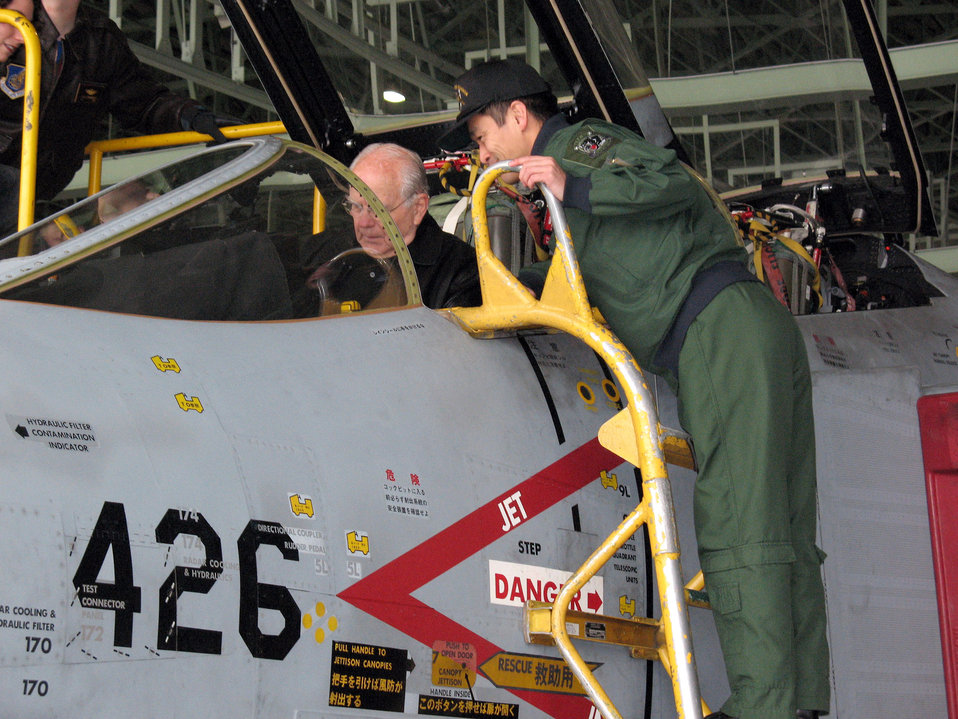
Vietnam veteran's experiences guide today's Airmen

Retired Col. James Gilliland sits in the cockpit of an RF-4C during a visit to Misawa Air Base, Japan. He flew 100 reconnaissance missions in that type of jet during the Vietnam War.